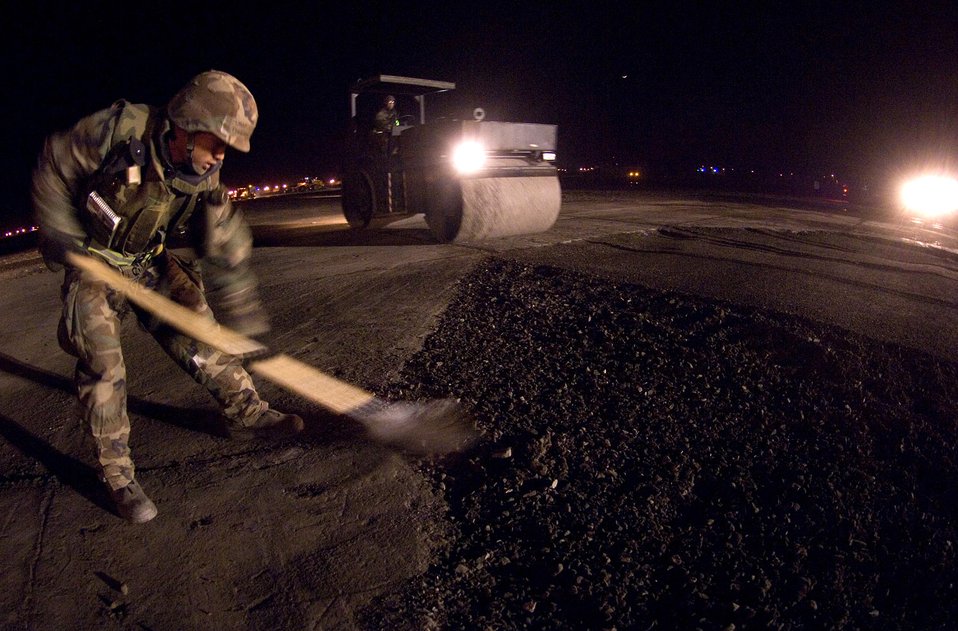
Repair team keeps Kunsan mission going

Staff Sgt Ephraim Advincula, an 8th Civil Engineer Squadron Airfield Damage Repair team member, shovels gravel into a crater being repaired on the runway April 19 at Kunsan Air Base, South Korea. Kunsan AB is currently undergoing an Operational Readiness Inspection to test the 8th Fighter Wing's ability to conduct its wartime mission. During exercises, ADR teams perform several functions including crater repair after simulated attacks and airfield lighting during simulated power outages, making it possible to get aircraft back in the air quickly.